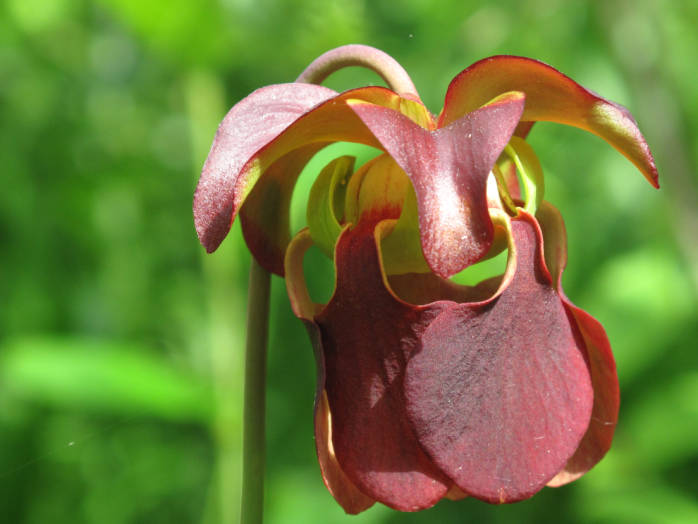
Mountain sweet pitcher plant

endangered, North Carolina